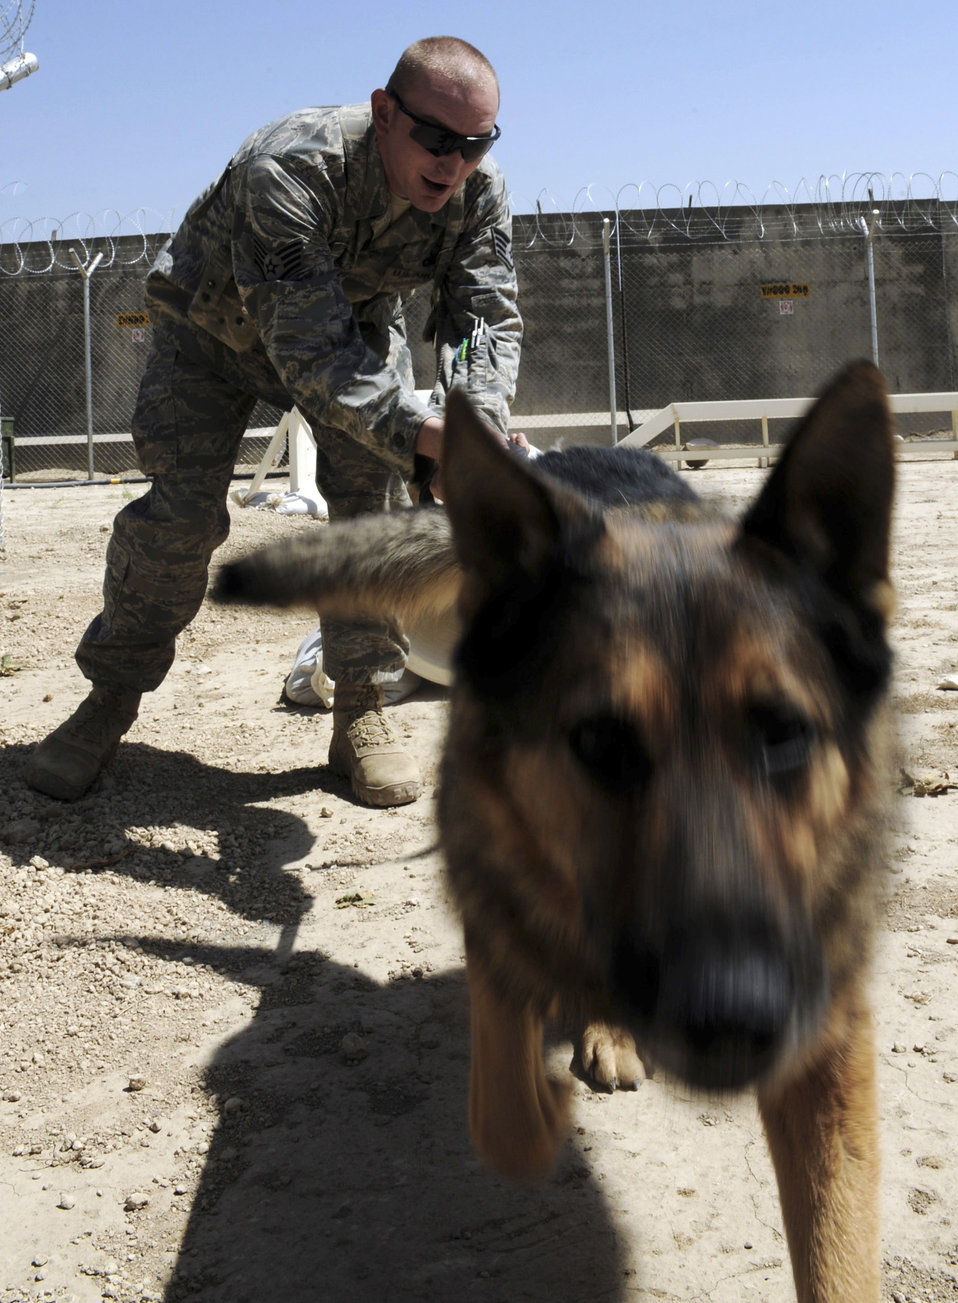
Dog days of summer

Staff Sgt. Chris Reynolds runs his German shepherd, Baiky, through a training obstacle course Aug. 7 at Bagram Airfield, Afghanistan. Sergeant Reynolds, an eight-year Air Force veteran, is a dog handler with the 455th Expeditionary Security Forces Squadron and is deployed from Vandenberg Air Force Base, Calif. He and his dog patrol the base and inspect mail, luggage and vehicles for narcotics.